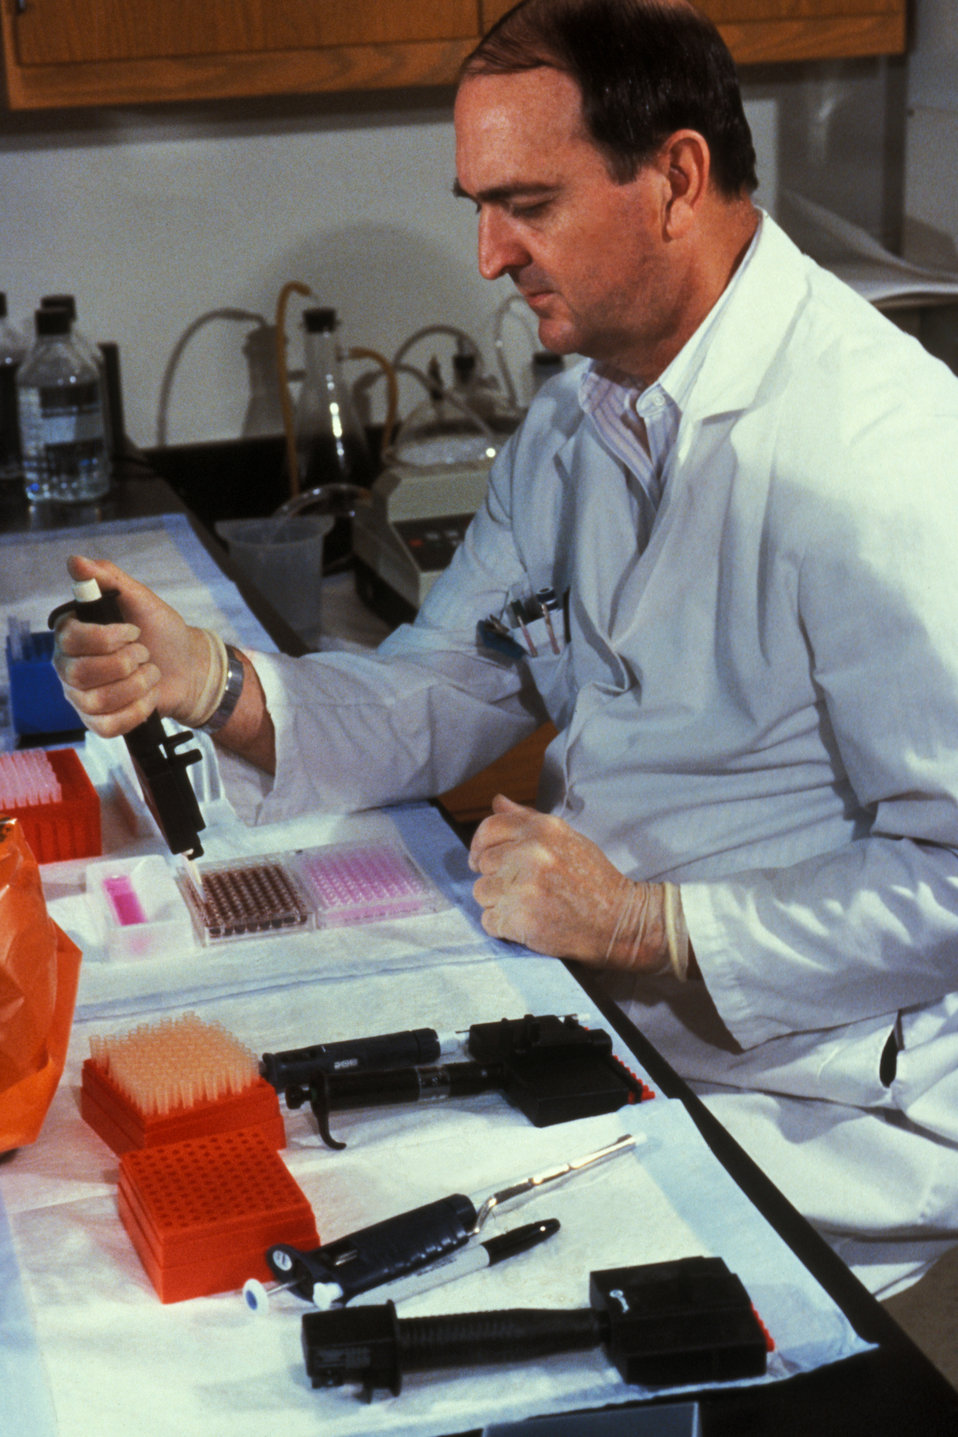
Here is a CDC lab technician is working on AIDS research, 1988.